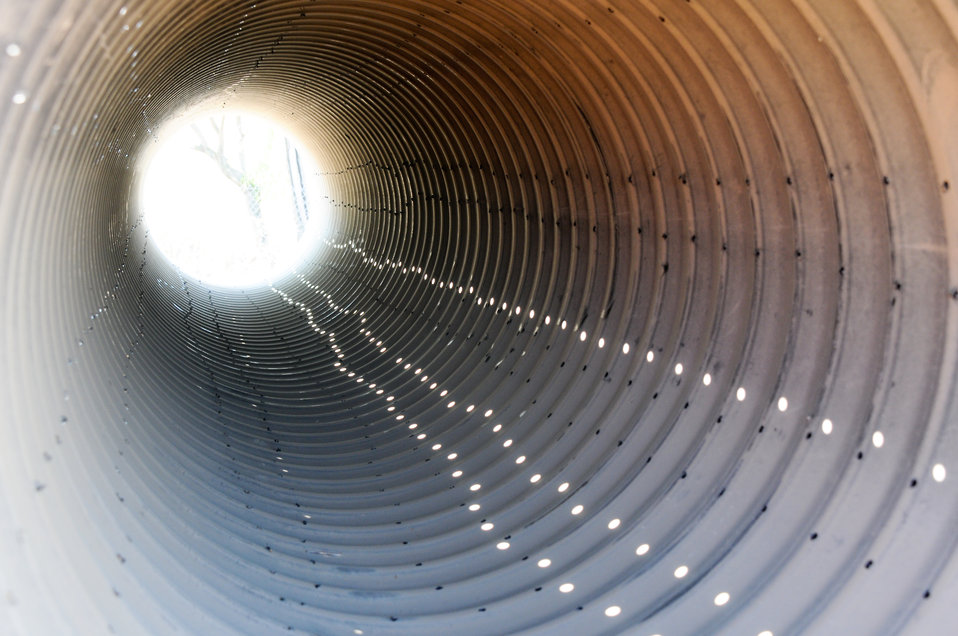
Yolo Bypass levee repair

Drainage pipe awaits placement inside a Yolo Bypass levee in West Sacramento, Calif., Aug. 18, 2011. Under its West Sacramento Project, the U.S. Army Corps of Engineers Sacramento District is repairing a slump in the levee and installing a drain and pumps to redirect water seeping into the levee. The perforated pipe, wrapped in a permeable sheath to keep out dirt, will collect water seeping into the levee and channel it into the bypass. Since 2002, seepage has been causing the levee to sink by about two feet a year on average, Corps engineer Greg Solakis said.